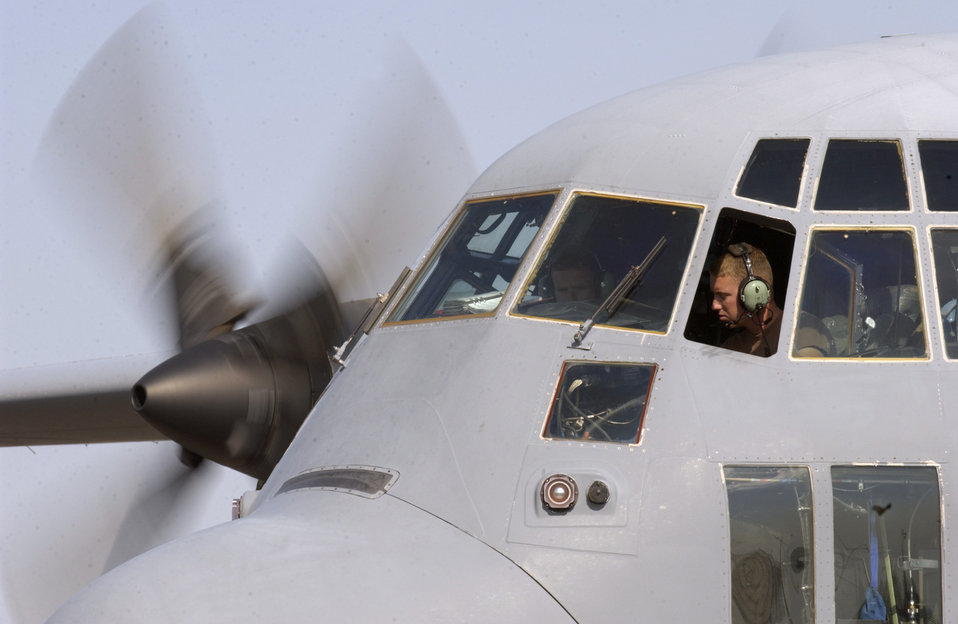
Maintaining the Herc

MANAS AIR BASE, Kyrgyzstan -- Airman 1st Class Alex O'Donnell and Senior Airman Derek Smith climb into a C-130 Hercules flight deck to fire up the engine and watch for changes in the gauges. They are aircraft maintainers assigned to the 376th Expeditionary Air Maintenance Squadron and are deployed from Little Rock Air Force Base, Ark.